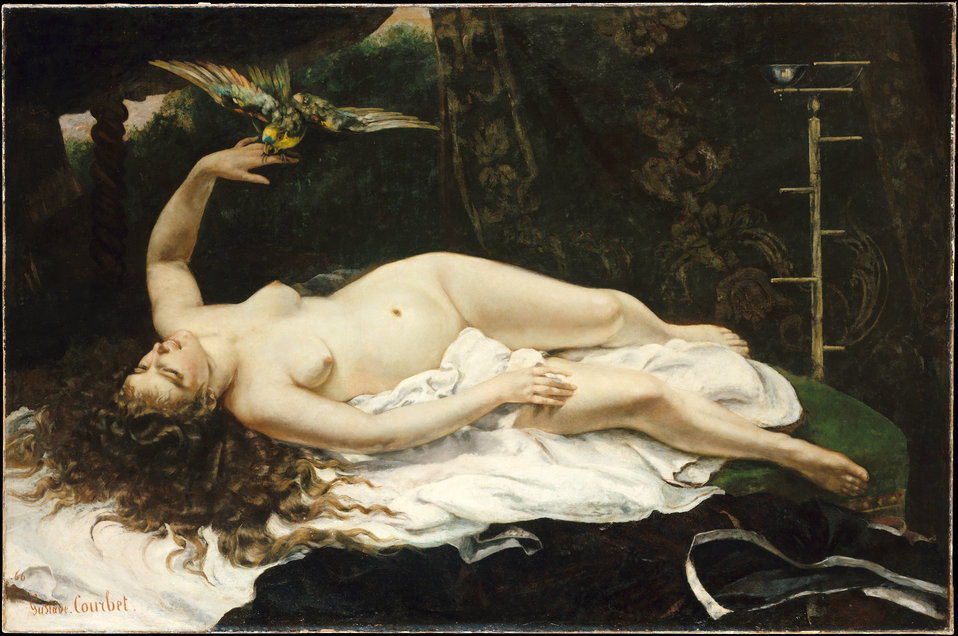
1866 Gustave Courbet - Woman with a Parrot